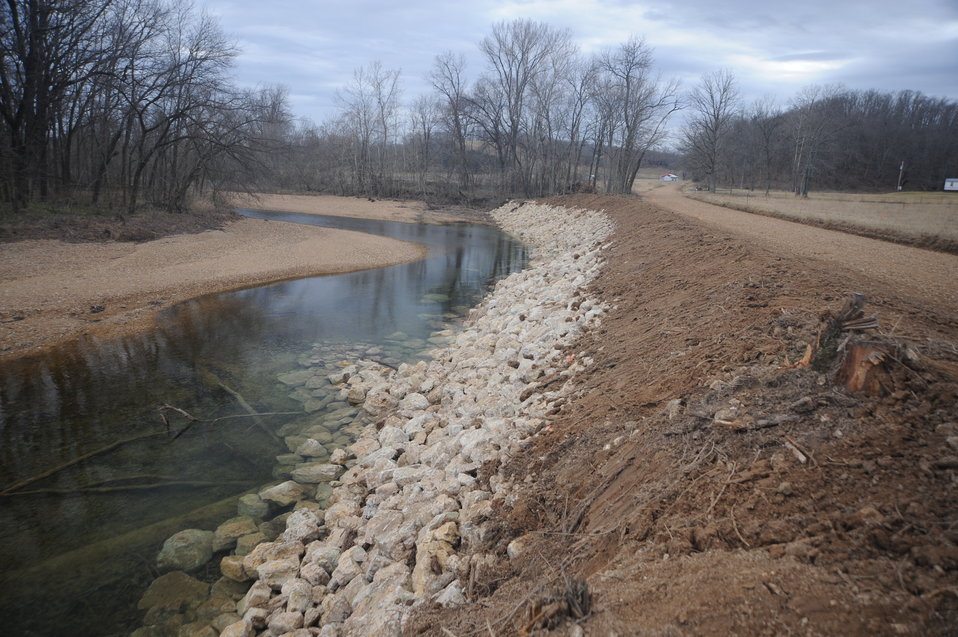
Ambrose Project - During 3

Upstream view of completed longitudinal fill stone toe protection and rock vane. The small rock vane can be seen underwater in the foreground.